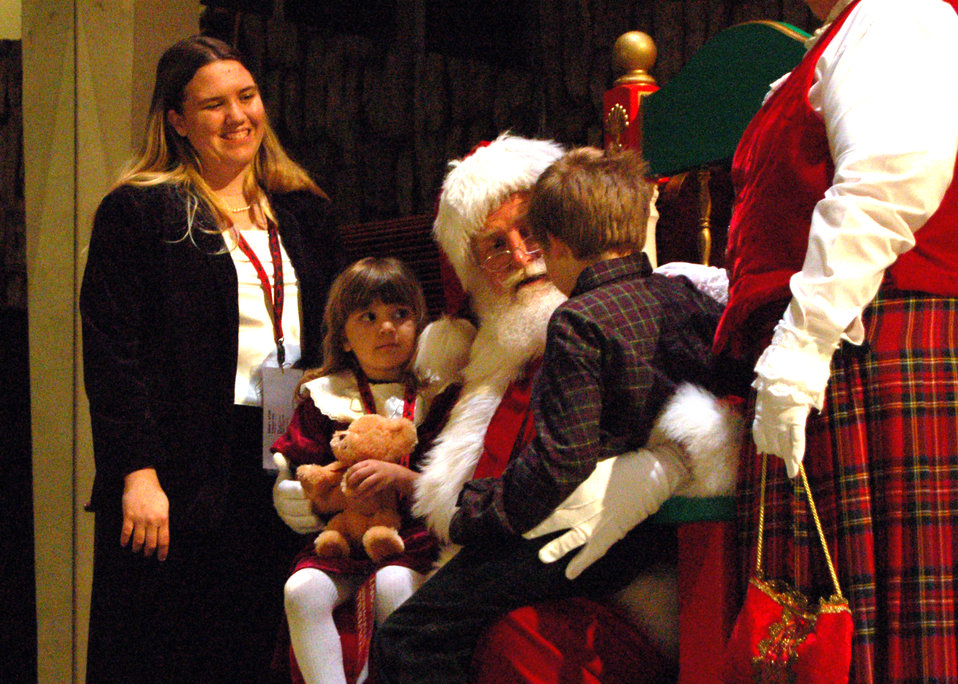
Snowball Express

Tyler Silva tells Santa what he wants for Christmas while his mom, Shannon and sister, Zoe look on Dec. 15. The meeting took place during the event's kickoff dinner at the Crystal Cathedral. The Snowball Express is a four-day event that includes a trip to Disneyland and tickets to an Anaheim Ducks game.